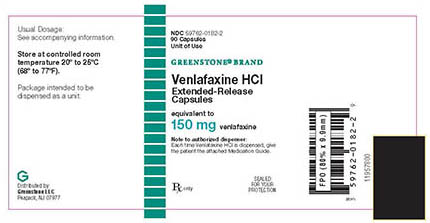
RECALLED – Venlafaxine HCl 150 mg extended-release capsules

March 6, 2014 – Product Recall – Pfizer Initiates Nationwide Voluntary Recall of Two Lots of Pfizer’s Effexor XR® 150 Mg Extended-Release Capsules and One Lot of Greenstone’s Venlafaxine HCl 150 Mg Extended-Release Capsules Due to the Possible Presence of Tikosyn® Capsules.